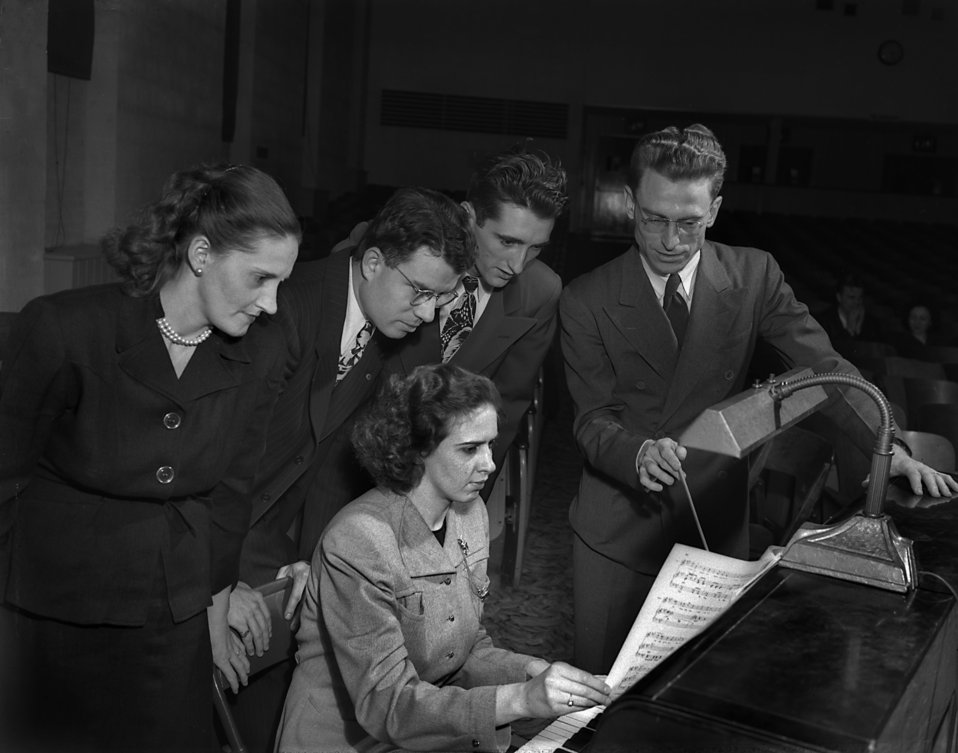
Community Chorus Rehearsal 'Merry Window'

004146-2 DOE photo by Ed Westcott

Oak Ridge Tennessee March 1948